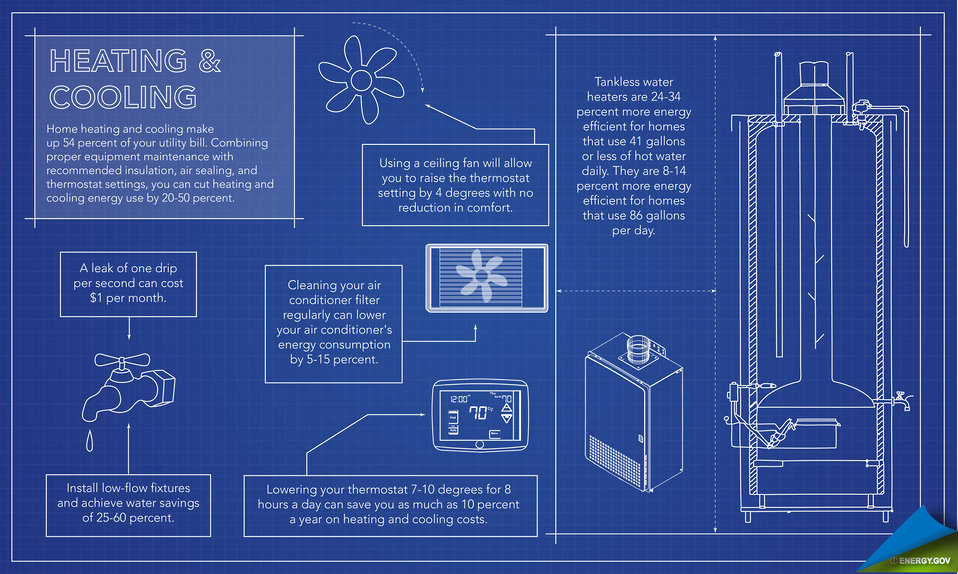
The Energy Efficient Home: Heating and Cooling